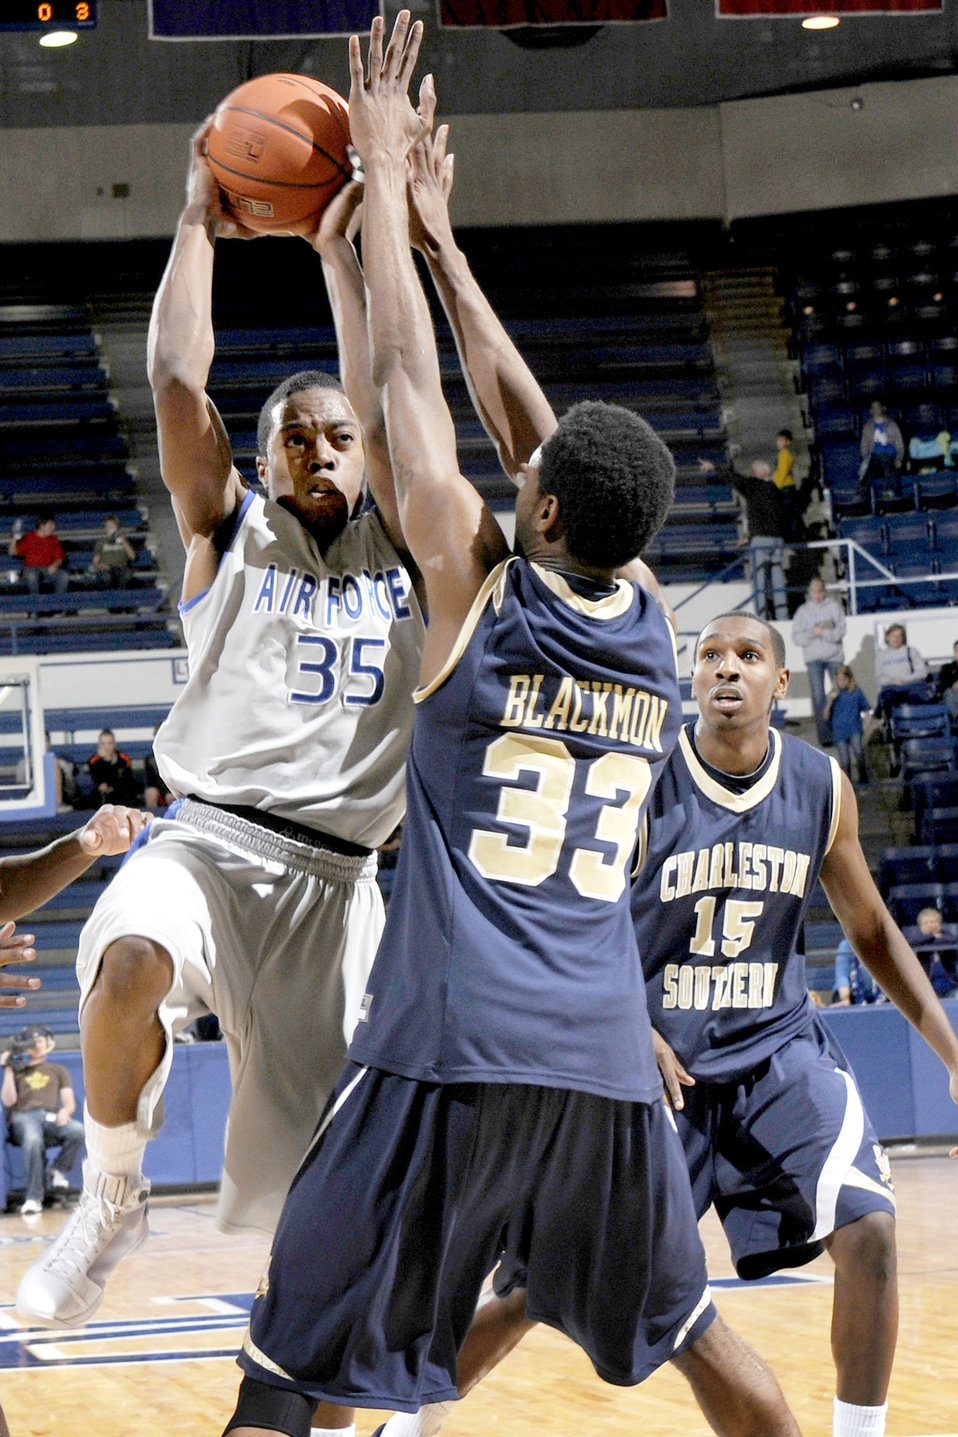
Air Force Academy

Falcons junior guard Evan Washington drives towards the net during the Air Force-Charleston Southern match at the Air Force Academy?s Clune Arena Nov. 28, 2009. The Falcons won 68-58 in the non-conference game. Air Force improved to 3-1 on the season and will host North Carolina Central Dec. 2.